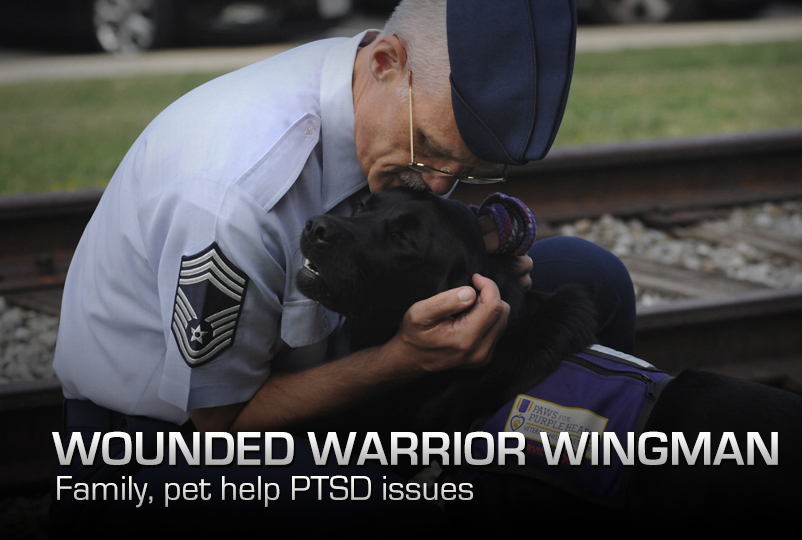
Wounded Warrior Wingman

Chief Master Sgt. Richard Simonsen hugs his service dog, Yoko, while on a
walk. Simonsen lives with Post Traumatic Stress Disorder (PTSD), a condition
he endured on a deployment to Afghanistan and the service dog helps him with
his daily activities. PTSD can occur after one has been through a traumatic
event.